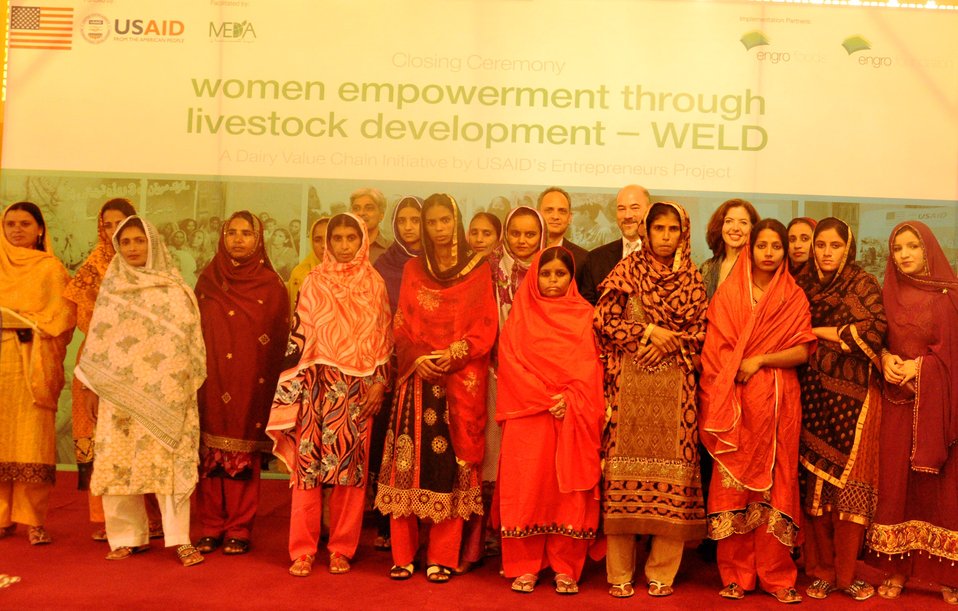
Successful completion of USAID’s Entrepreneurs Project - WELD

Mr. Leon S. Waskin, USAID’s Regional Director for Sindh, congratulated dairy farmers of Sindh and South Punjab on completion of Entrepreneurs Project